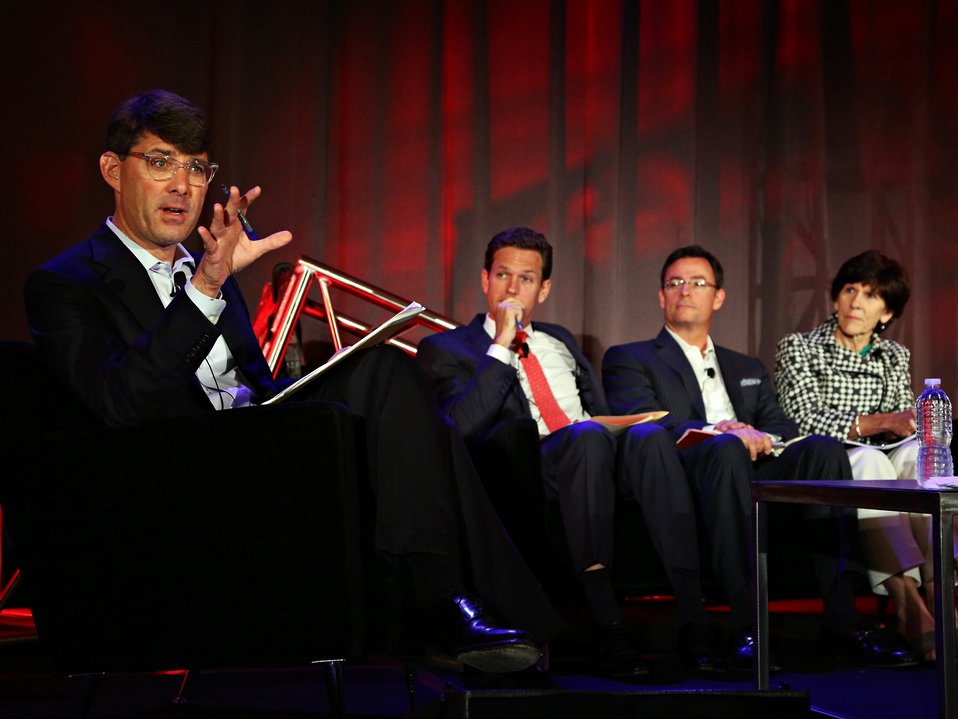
Day 2 Keynote Session 12

Day 2 headlining panel - left to right: Craig Cornelius, Sr. VP of Business Development for NRG Solar; Joseph Desmond, Sr. VP of Marketing & Government, BrightSource.